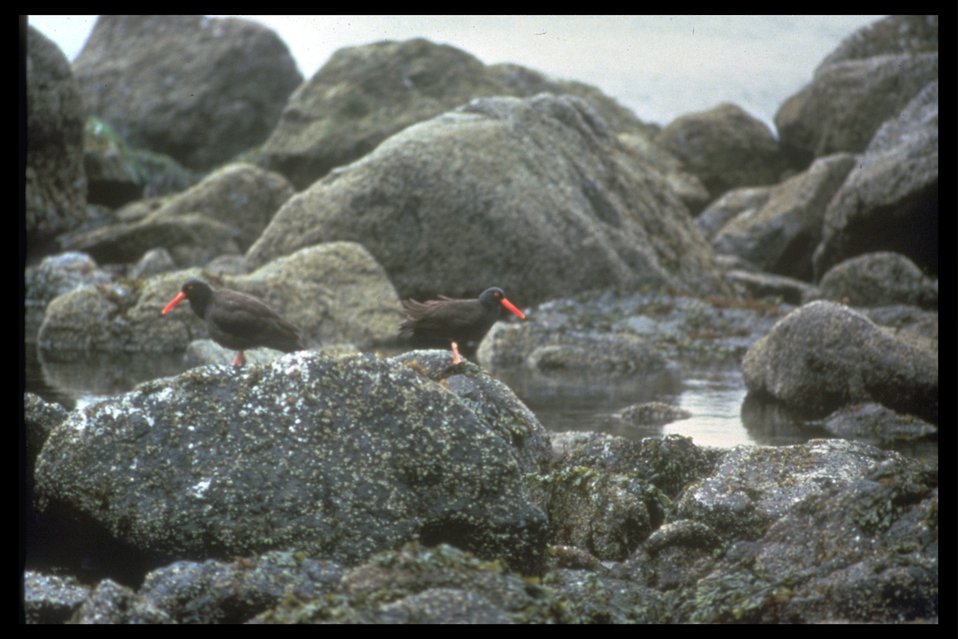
Two Black Oystercatchers perched on a rock.